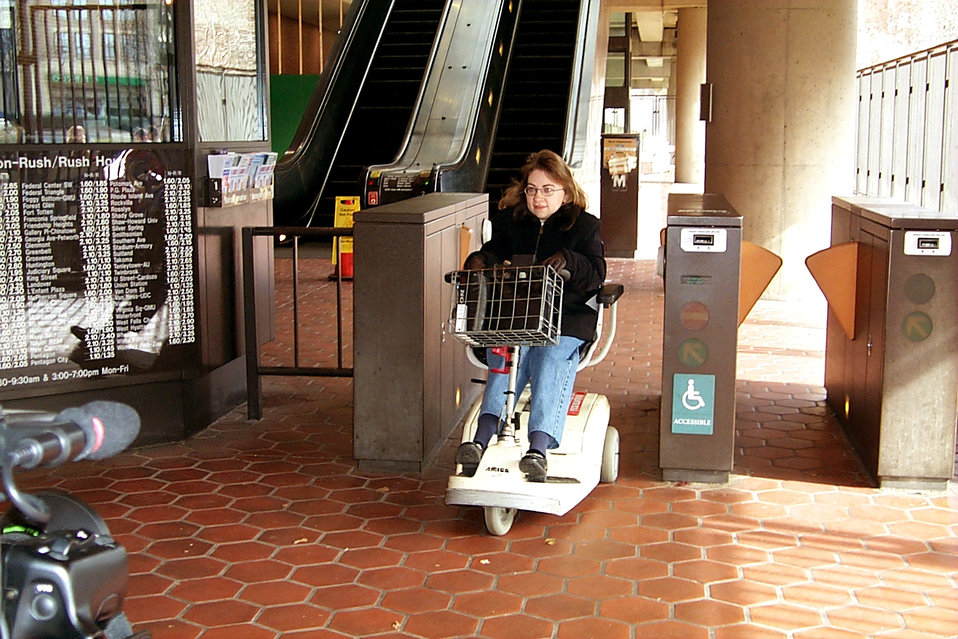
In this 2004 photograph, a motorized scooter-bound woman was in the process of passing through the turnstile portal leading away from the disembarkation point of a mass-transit train station. The wider entryway was necessary, in order to allow for the passage of the wider, wheelchair vehicle, a possible scenario that need be taken into account during the design phase of such a publicly-accessible portal. Other possibilities, which would warrant the need for wider entryways, would include baby carriages or strollers, patrons carrying luggage or parcels, heavyset visitors, and people using other types of mobility aids or guide dogs. See PHIL# 9077 for the same woman entering the same turnstile.